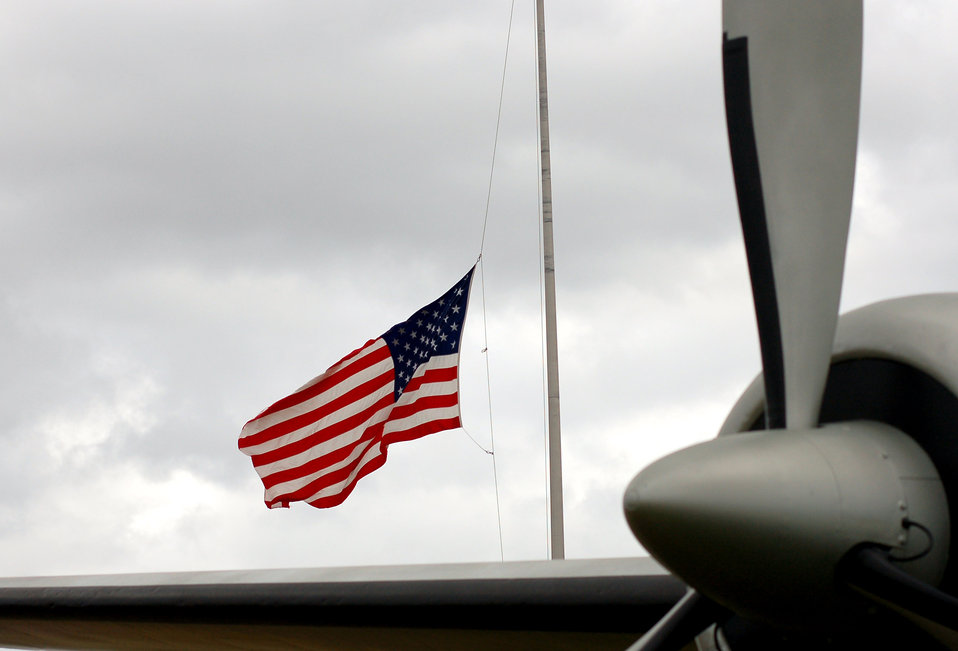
We remember

The United States flag at Lackland Air Force Base, Texas, flies at half staff Dec. 28 in honor of former President Gerald Ford who died Dec. 26.